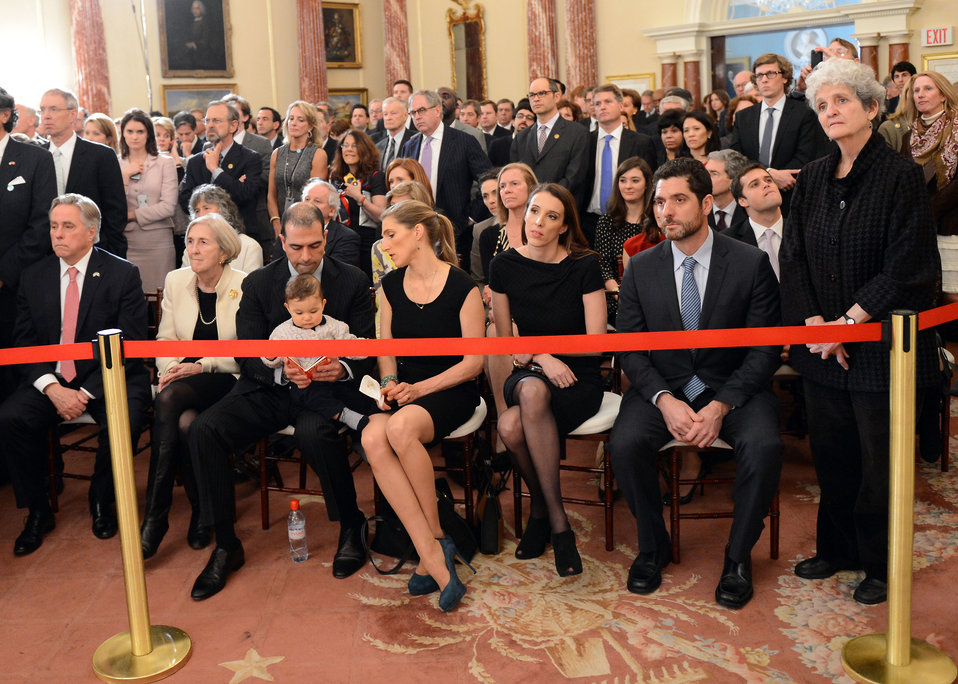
Members of Secretary Kerry's Family Look on as Vice President Biden Speaks

Members of U.S. Secretary of State John Kerry’s family look on as U.S. Vice President Joe Biden speaks during his former Senate colleague's ceremonial swearing-in at the U.S. Department of State in Washington, D.C., February 6, 2013.